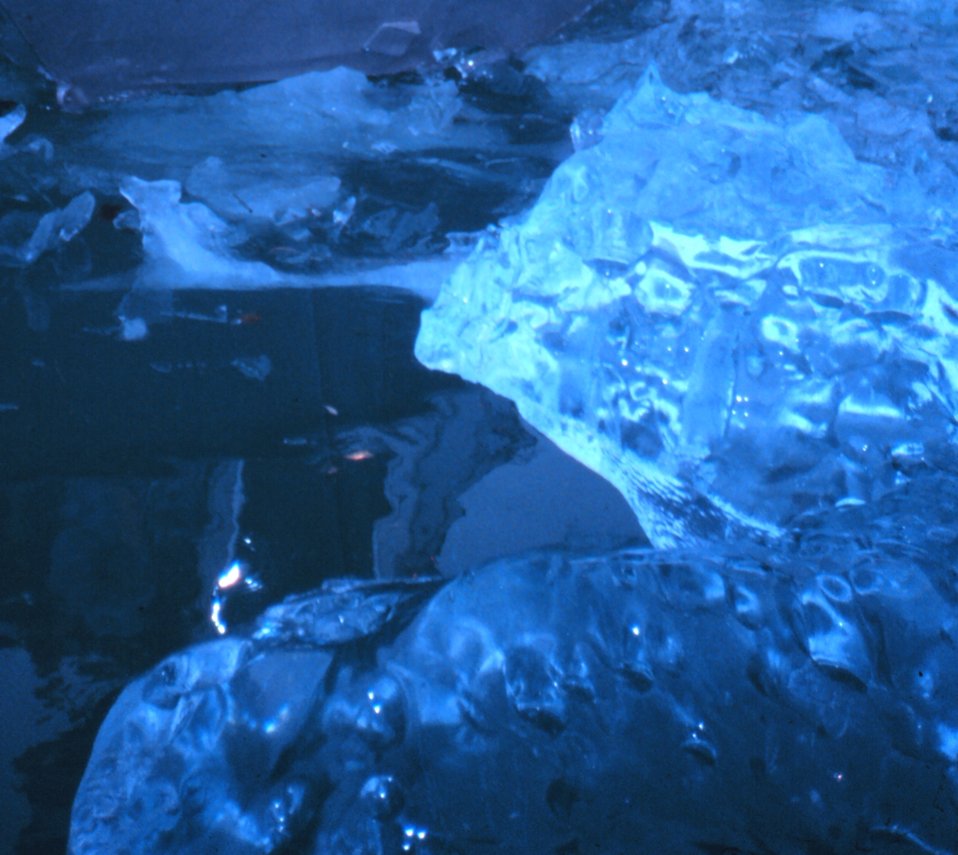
Crystal clear glacial ice